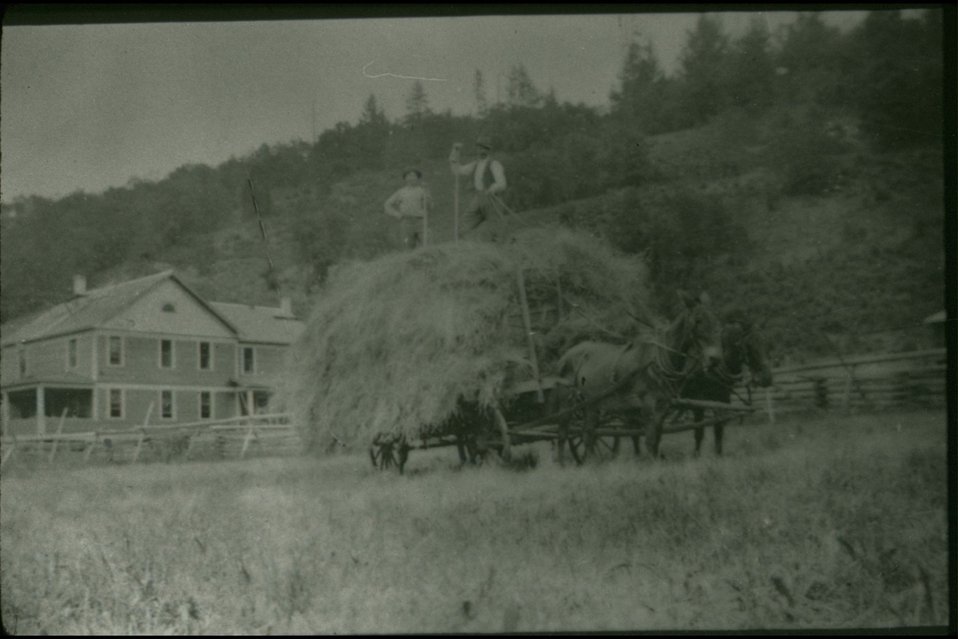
Rogue River - Hay harvest.